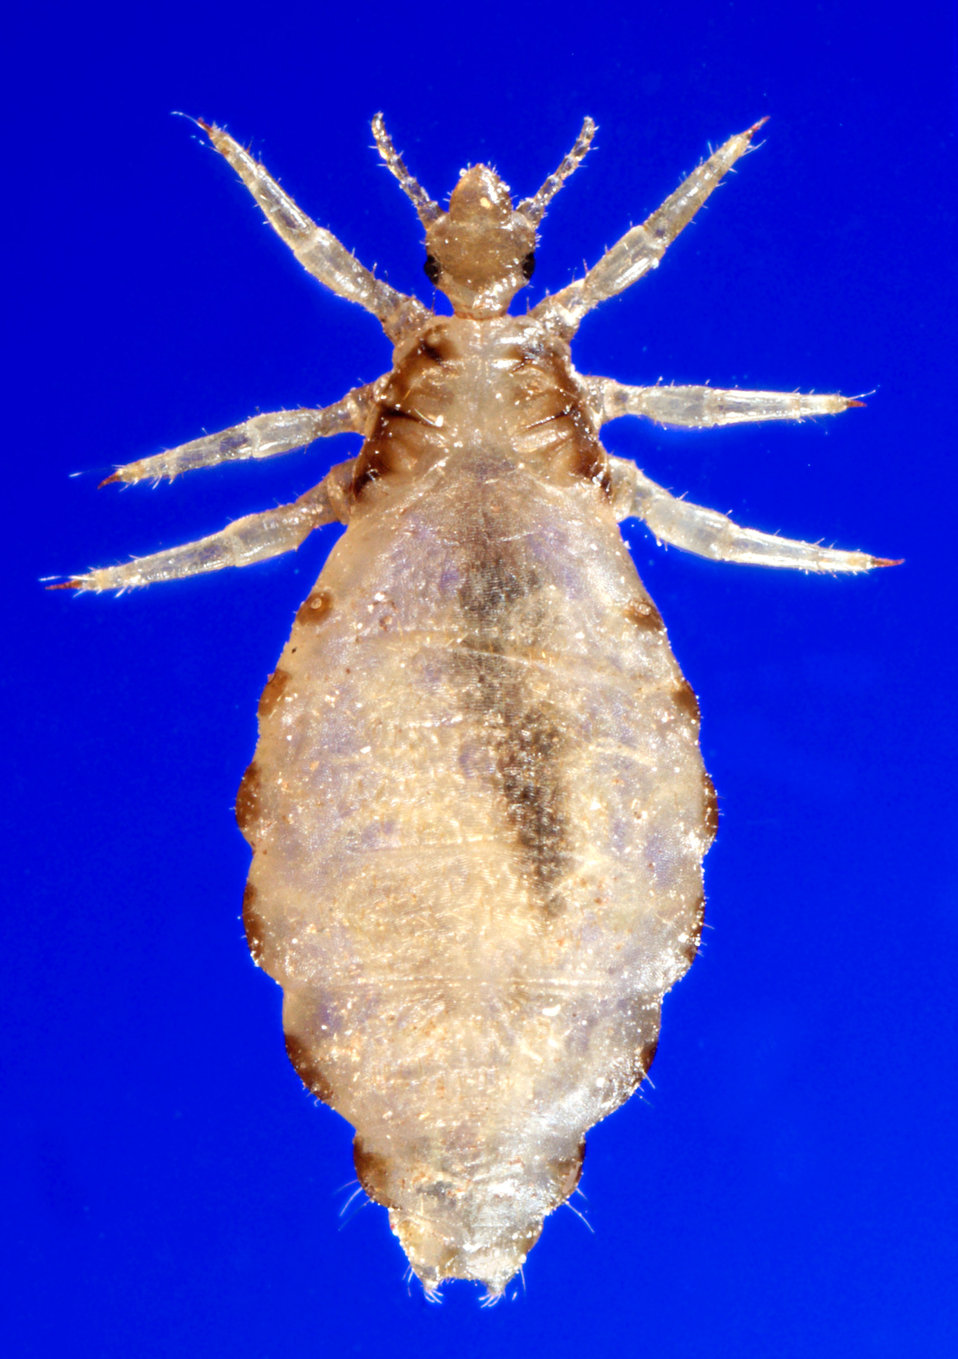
This 2006 photograph depicted a dorsal view of a female body louse, Pediculus humanus var. corporis. Some of the external morphologic features displayed by members of the genus Pediculus include an elongated abdominal region without any processes, and three pairs of legs, which are all equal in length and width. One of the anatomical features displayed by the female louse is its concave distal abdominal tip, unlike the male (see PHIL# 9203, 9205, and 9206), which is convex, or rounded.Body lice are parasitic insects that live on the body, and in the clothing or bedding of infested humans. Infestation is common, found worldwide, and affects people of all races. Body lice infestations spread rapidly under crowded conditions where hygiene is poor, and there is frequent contact among people.